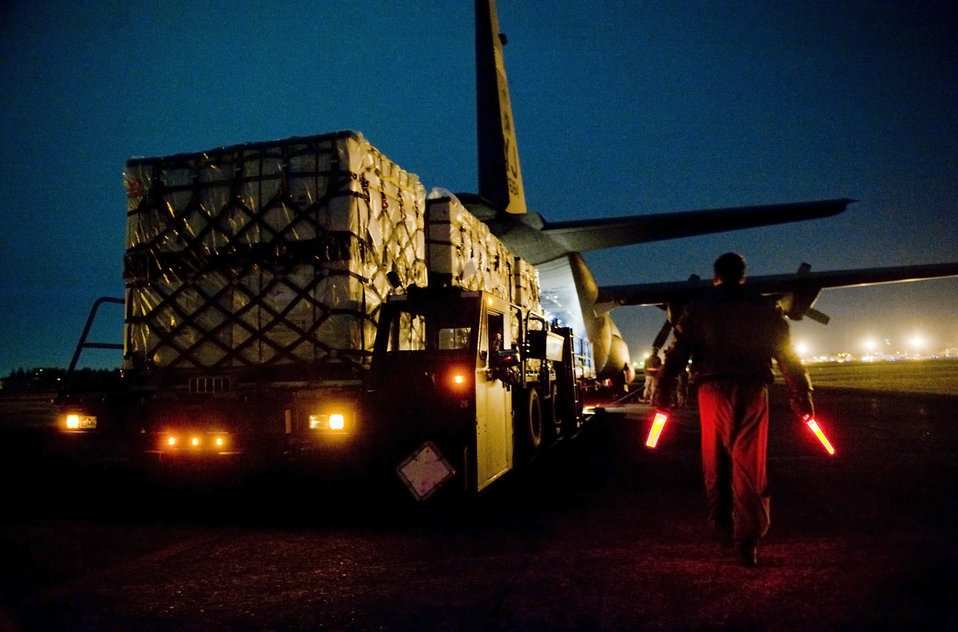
36th Airlift Squadron provides warmth at Sendai Airport

Senior Airman Jason Barbieri guides a K-loader full of blankets onto a C-130H Hercules March 18, 2011, at Yakota Air Base, Japan. Airmen from the 36th Airlift Squadron provided blankets to Sendai Airport in support of Japan's earthquake and tsunami relief efforts. Airman Barbieri is assigned to the 36th AS.